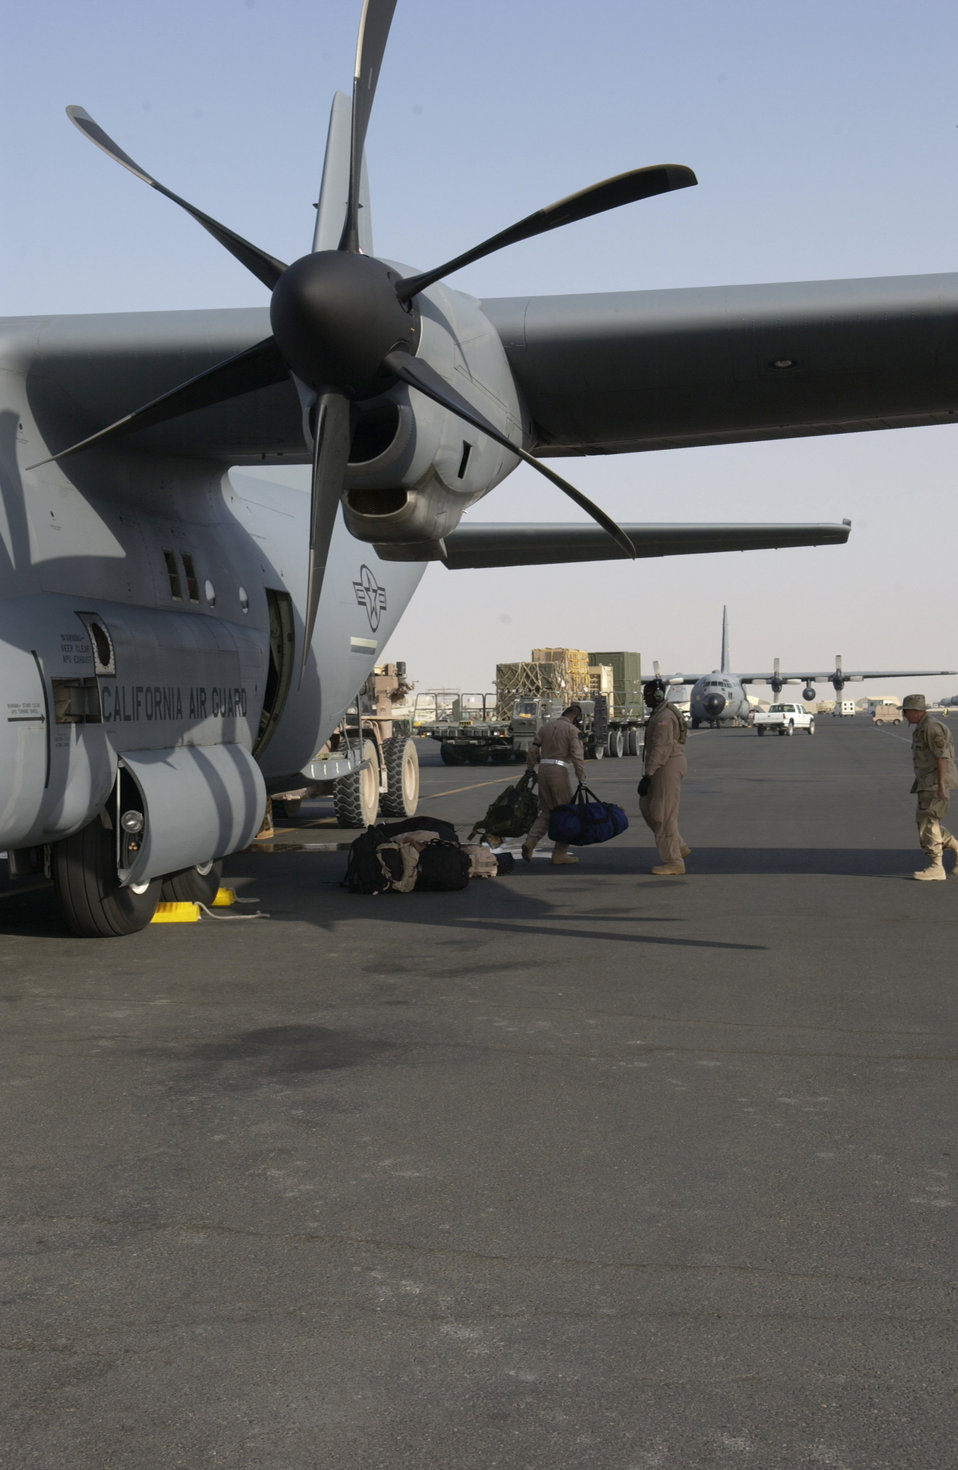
Latest C-130J evolution arrives on desert ramp

SOUTHWEST ASIA -- Airmen unload a C-130J Hercules after its arrival at a forward-deployed location here June 7 supporting operations in Iraq, Afghanistan and the Horn of Africa. The aircraft is from the California Air National Guard's 146th Airlift Squadron.